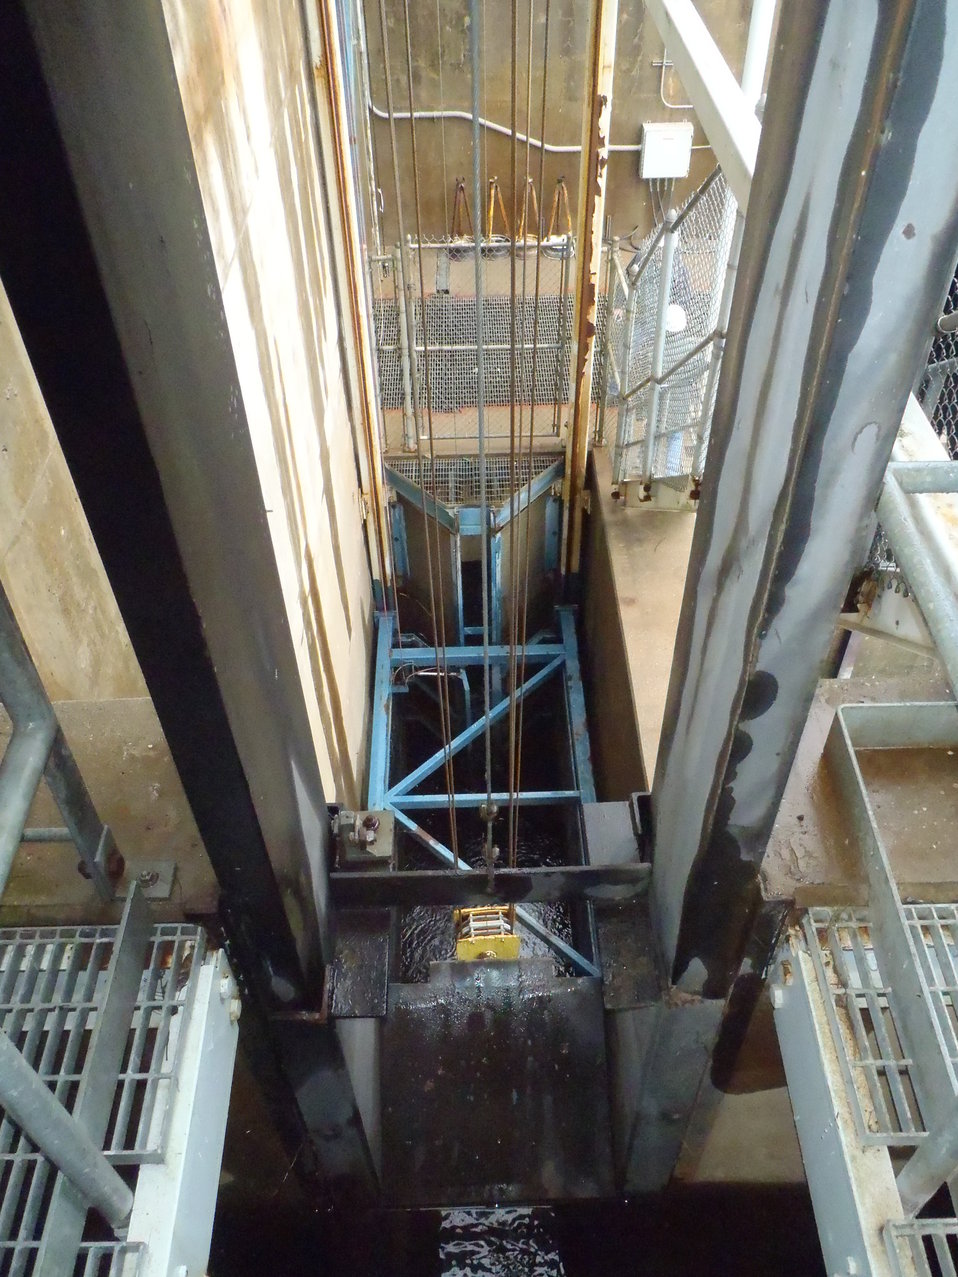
Large fish lift on Androscoggin River